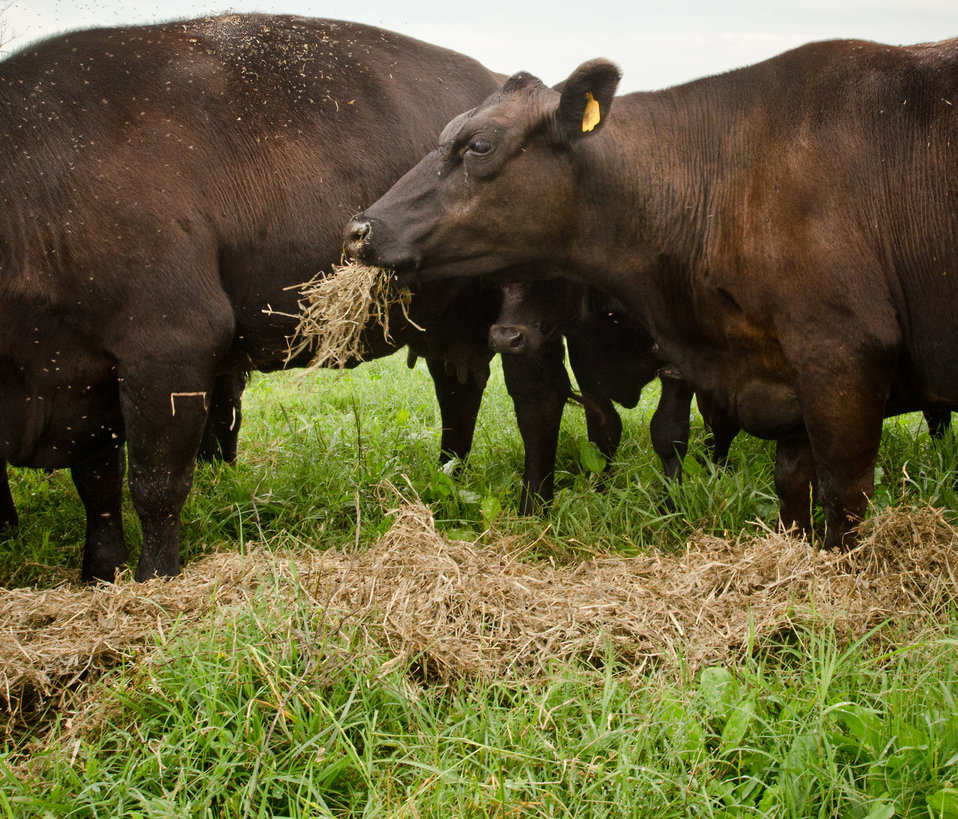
Black Angus cows and calves graze organic pastures, and for added nutrition and variety, they enjoy a daily feeding of sweet silage at Nick’s Organic Farm, owned by Nick Maravell, in Adamstown, MD on Friday, July 12, 2013. The white plastic wrapped bales of pasture grass and alfalfa have been fermenting for months to create sweet silage that stores well and can be used to feed cattle at varying amount all year long. The fermentation process sweetens the taste and increases the vitamin levels. The farm produces Black Angus beef, chicken, turkey, eggs, hay, soybeans, corn, alfalfa, orchard grass, rye; and other crops. The cattle are 100% grass-fed receiving certified organic pasture, certified organic hay (in winter), water and mineral salts mixed with sea kelp. The cattle are not fed hormones, antibiotics or animal products. Poultry feed from grain is ground from organic grain. The poultry also graze on organic pastures. The farm has conducted on-farm research with federal, state and non-profit agencies to refine organic practices. An organization such as the U.S. Department of Agriculture (USDA) Agricultural Research Service (ARS) center in Beltsville has been able to conduct research to improve organic crops and to breed and manage the cattle so that they have.